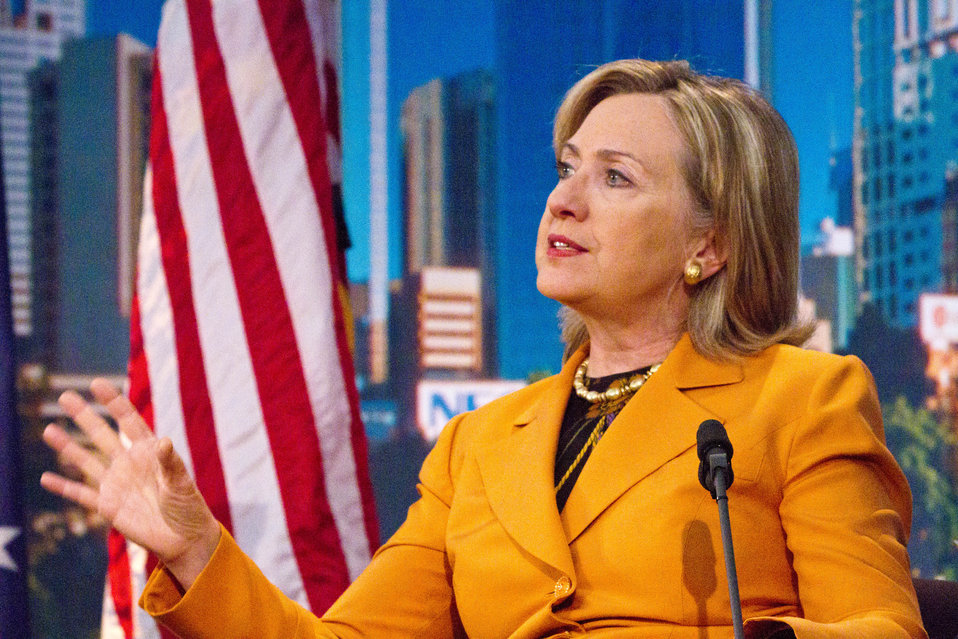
Secretary Clinton Responds to Questions

U.S. Secretary of State Hillary Rodham Clinton responds to questions during a Townterview with the Australian Broadcasting Company in Melbourne, Australia, on November 7, 2010.